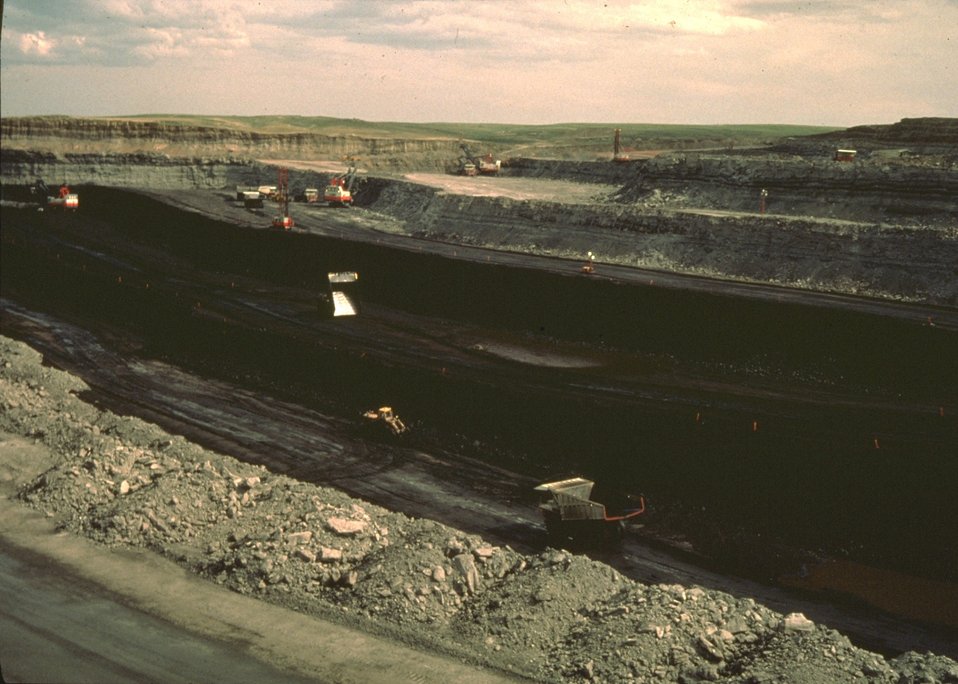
Coal bed methane development.